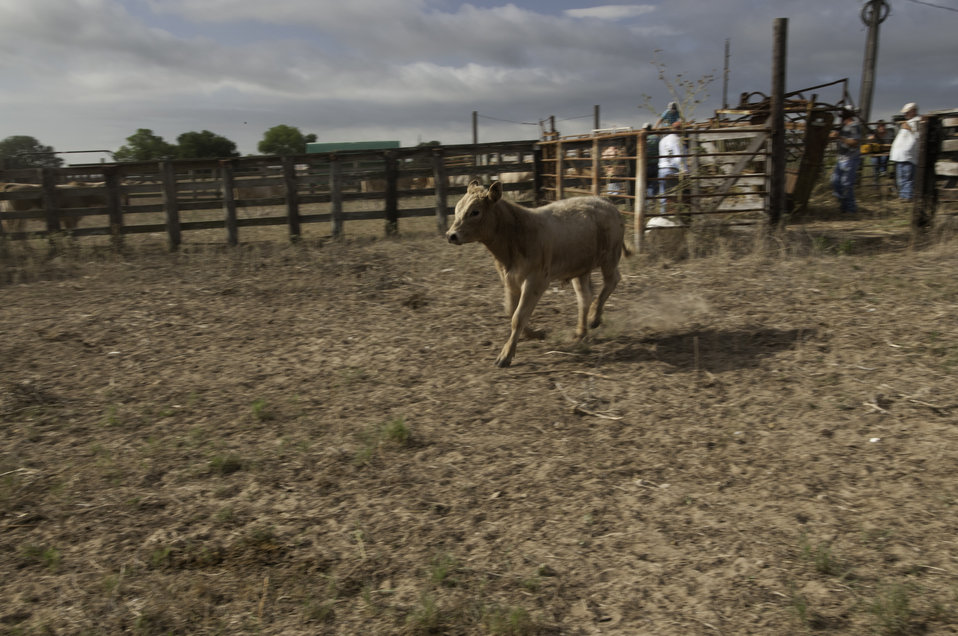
A steer is released after being immunized on a Texas farm on Aug. 21, 2013.